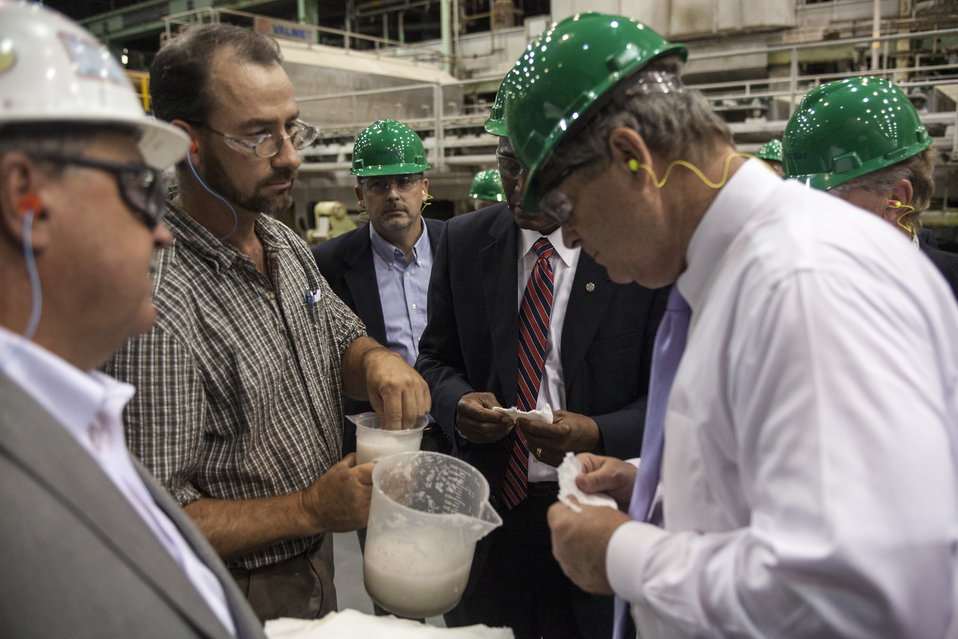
Agriculture Secretary Tom Vilsack (right) tours Domtar Inc. in Plymouth, NC on Friday, Aug. 15, 2013. Domtar produces lignin, a biobased material with the potential to create advanced new products and energy. Domtar is working with a number of partners, including the U.S. Forest Products Laboratory, on development of lignin applications that includes fuel additives, solid fuels, high performance adhesives and more. The U.S. Department of Agriculture (USDA) through a Biomass Research and Development Initiative funding s is the first of its type to open in the U.S. in more than 25 years.